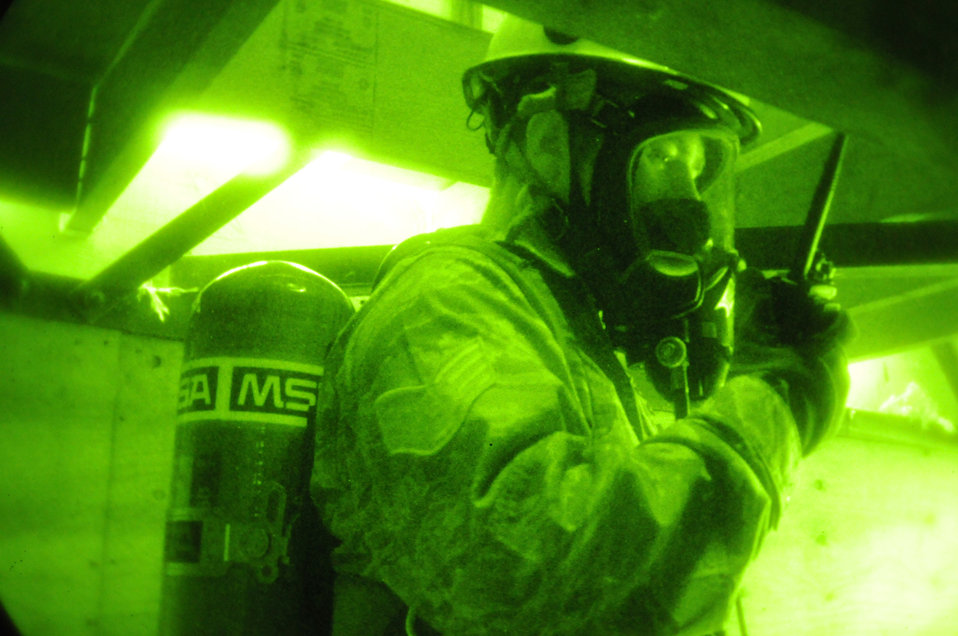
Firefighters sharpen their skills

Staff Sgt. Matthew Pugh radios information during a rappelling exercise Oct. 16, 2010, at the Phelps Collins Combat Readiness Training Center in Alpena, Mich. Firefighters from the Ohio Air National Guard's 180th Fighter Wing are participating in their annual training